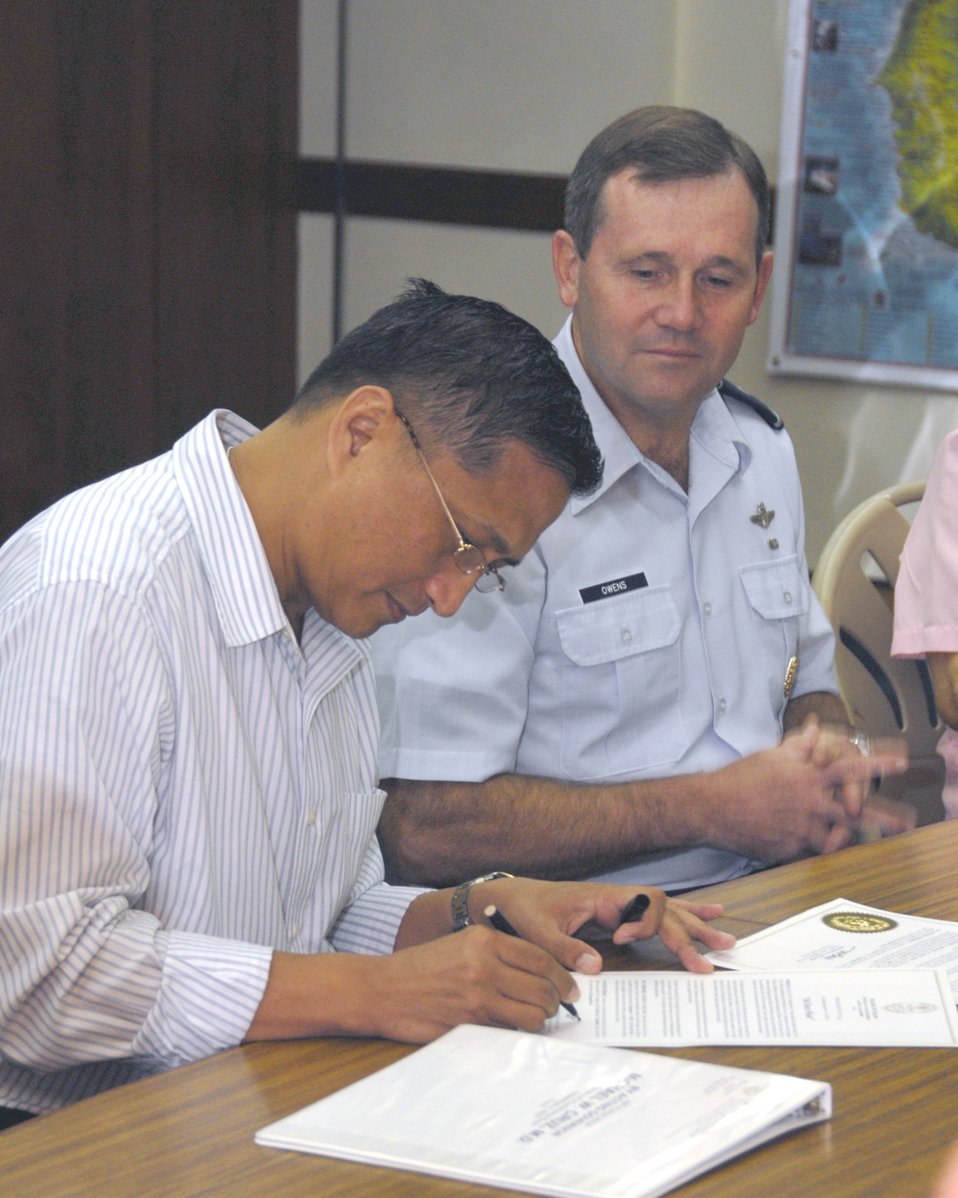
Governor of Guam signs Air Force Week proclamation

Guam's Lt. Gov. Michael Cruz signs Proclamation No. 2007-081, naming Sept. 4 to 9 as Air Force Week. More than 20 Andersen Airmen attended the proclamation signing which was held at the Ricardo J. Bordallo Governor's Complex in Adelup, Guam, Sept. 4.